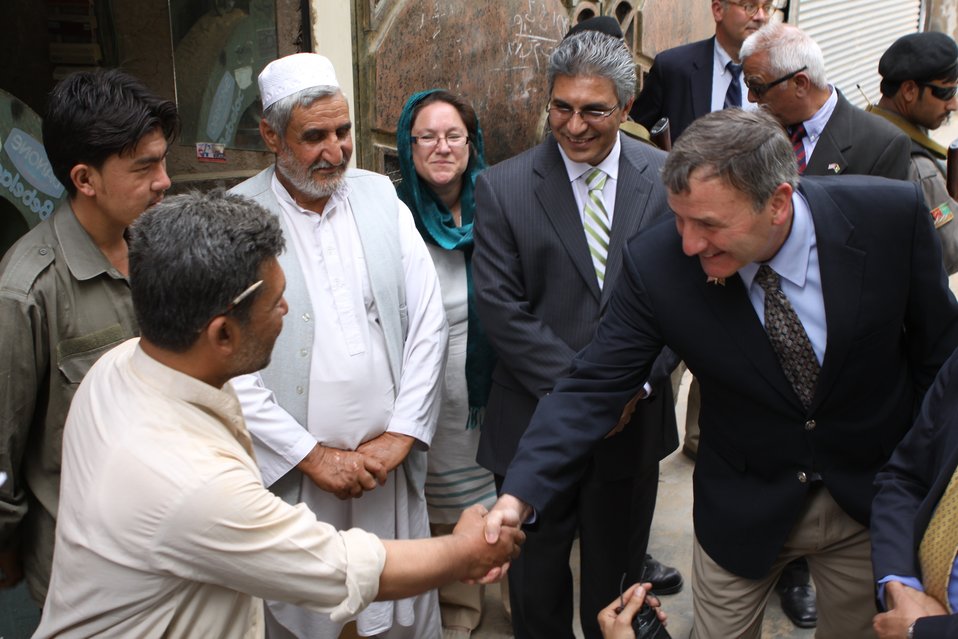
100525 Hirat Marble Conference 703